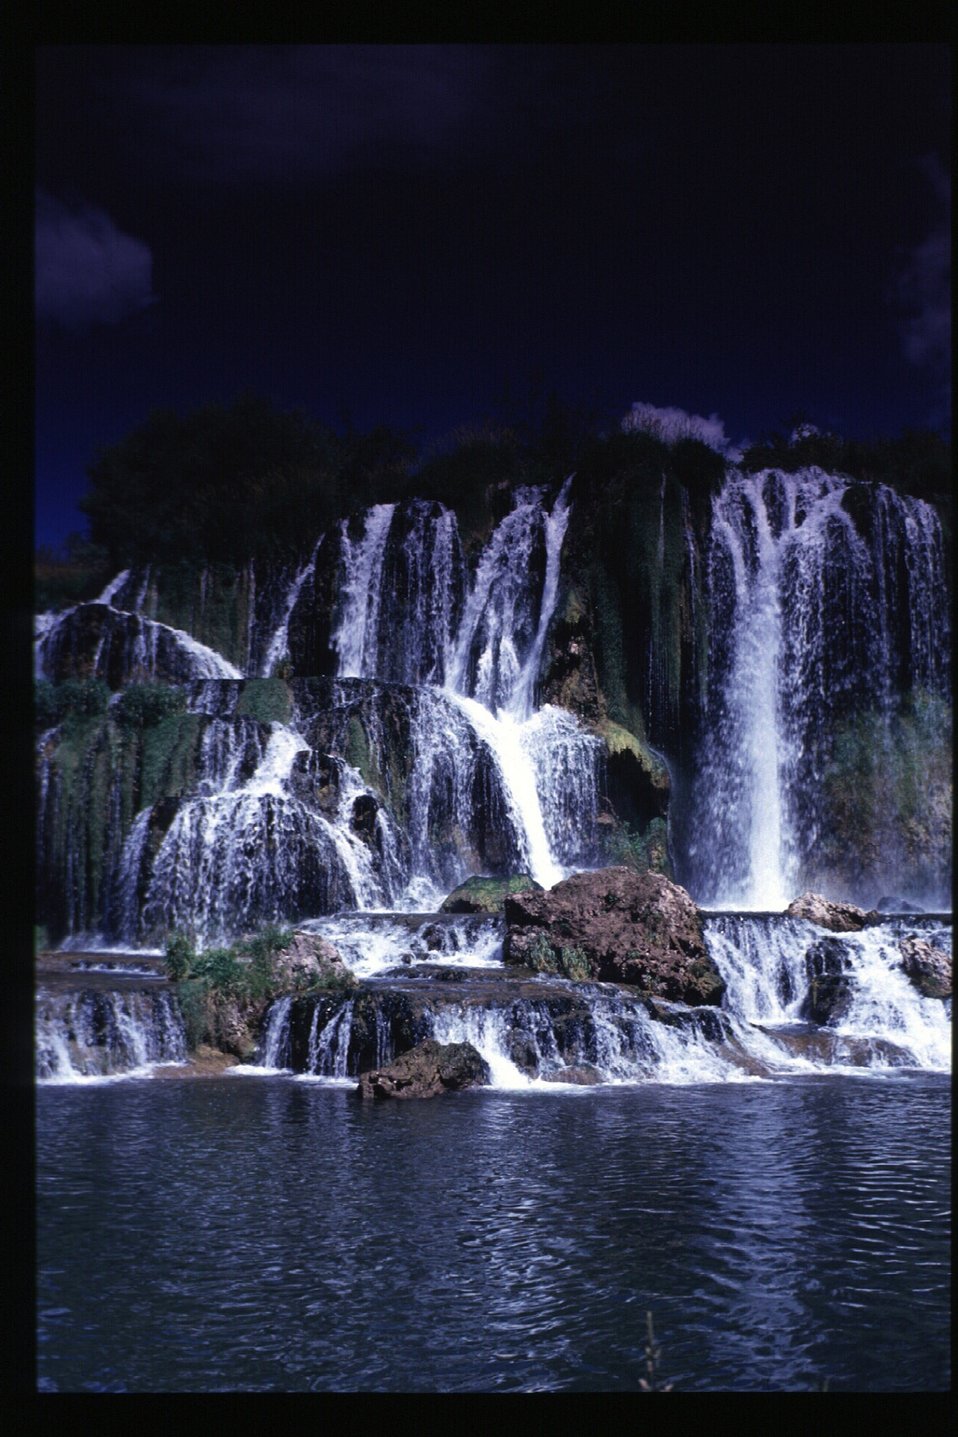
Water fall Scenic river Idaho Falls Field Office USRD Upper Snake River District